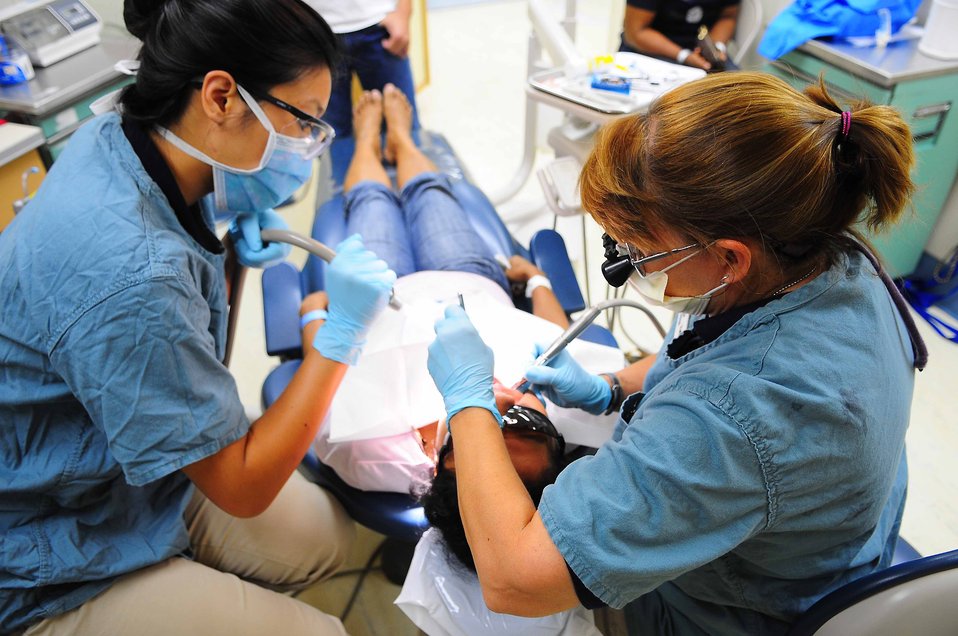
Alice Nguyen and Jan Westberry Treat an Indonesian Dental Patient

Alice Nguyen and Jan Westberry, volunteers with University of California, San Diego Pre-Dental Society, treat an Indonesian dental patient aboard the Military Sealift Command hospital ship USNS Mercy (T-AH 19), in support of Pacific Partnership 2010 in Ambon, Indonesia, on July 27, 2010. Mercy is in Ambon participating in Sail Banda 2010, a series of events hosted by the Government of Indonesia to promote the future of small islands. Mercy’s participation features medical and dental care clinics and construction projects in and around Ambon, as well as on Seram Island.